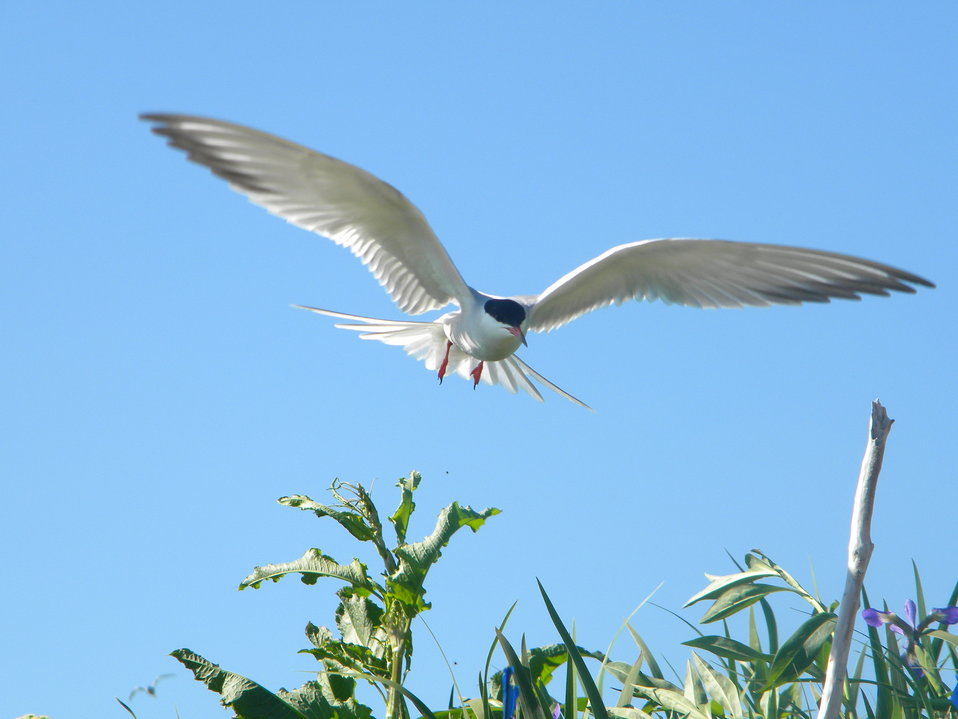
Common tern in flight

Petit Manan Island, Maine Coastal Islands NWR. Summer with the Seabirds blog: mainecoastalislands.wordpress.com/2010/08/01/terns/